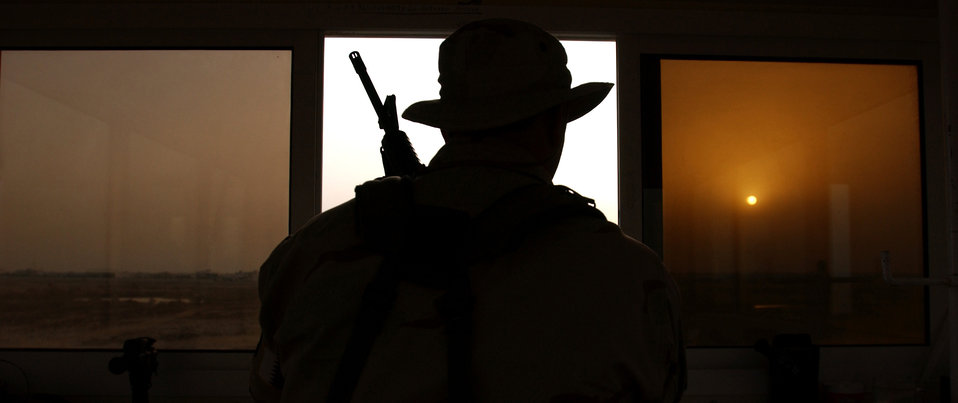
Myers

OPERATION ENDURING FREEDOM -- Tech. Sgt. Kevin Myers, a security forces member with the 64th Air Expeditionary Group, sits watch March 17 in an observation tower at a forward-deployed Operation Enduring Freedom location.